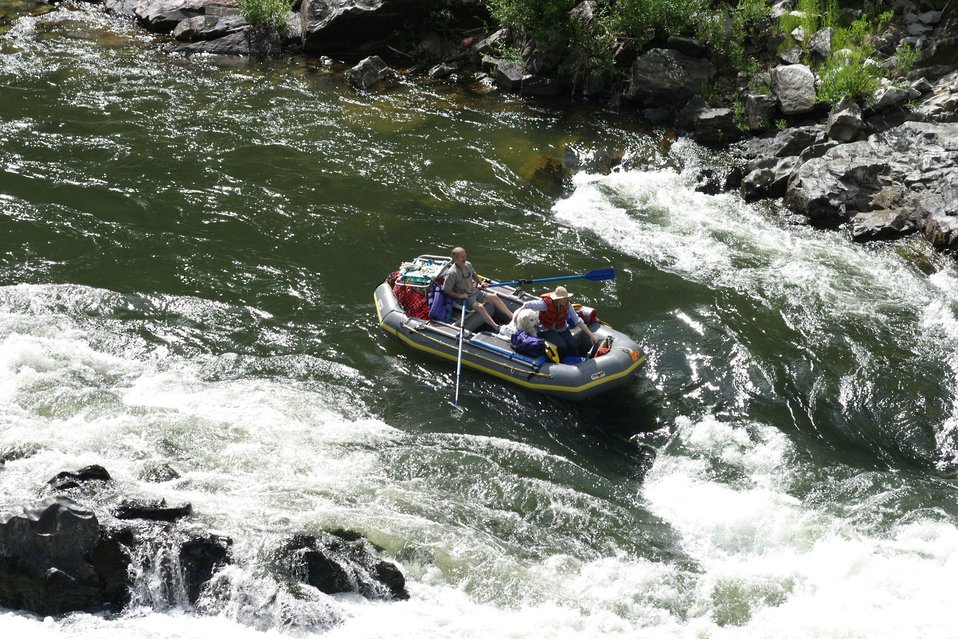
Boaters in Grave Creek Rapids